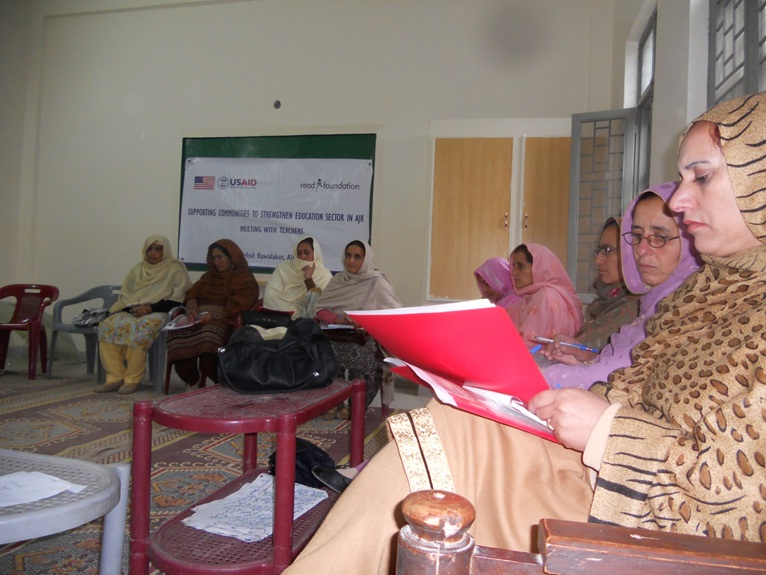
Caption 17 - READ Foundation - AJK RWLKT - Meeting Community for Education 3

Women from all walks of life were engaged in the campaign for education sector reforms led by READ Foundation under USAID’s Citizens’ Voice Project. Housewives, working women as well as female youth can be seen keenly participating in an awareness session in Azad Jammu & Kashmir.